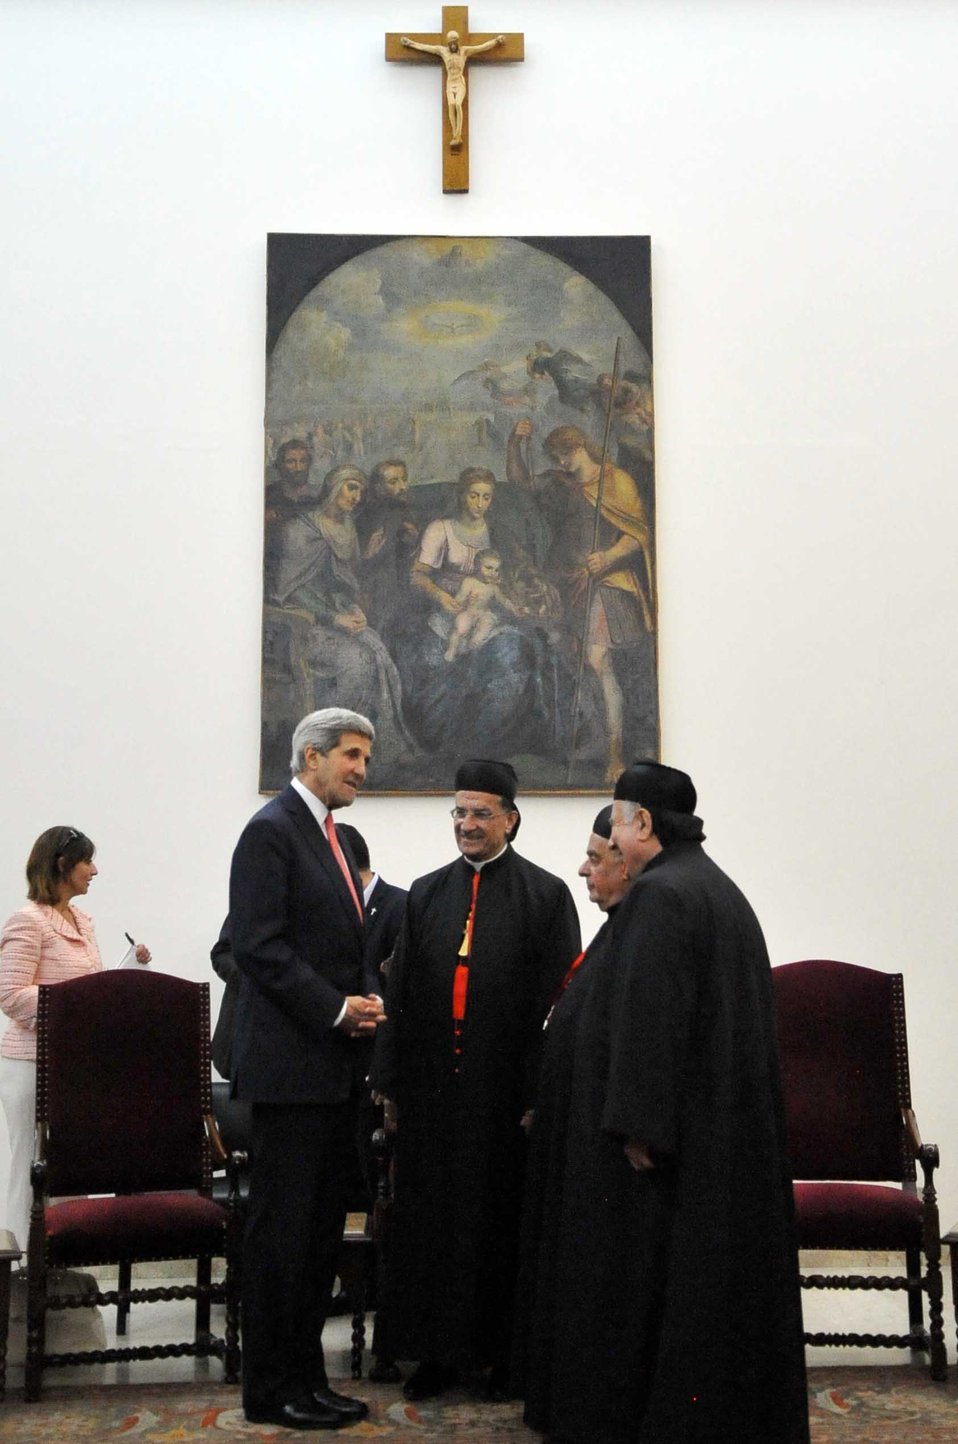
Secretary Kerry Meets With Christian Maronite Patriarch Rai in Beirut

U.S. Secretary of State John Kerry meets with Christian Maronite Patriarch Beshara Rai at the Archdiocese in Beirut, Lebanon, on June 4, 2014.